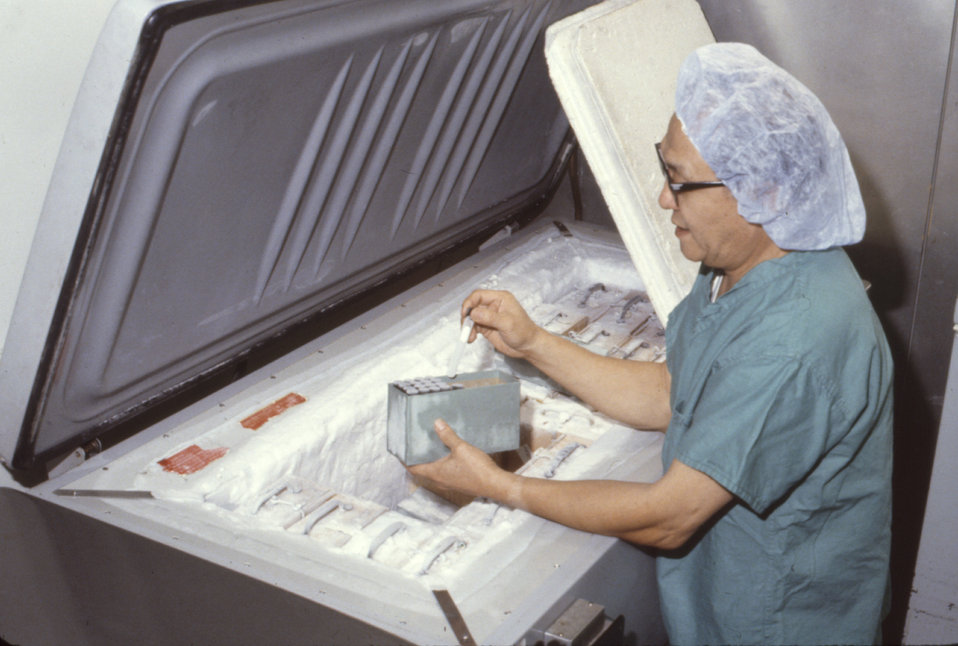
This laboratorian is retrieving specimens from a freezer during a laboratory training session.